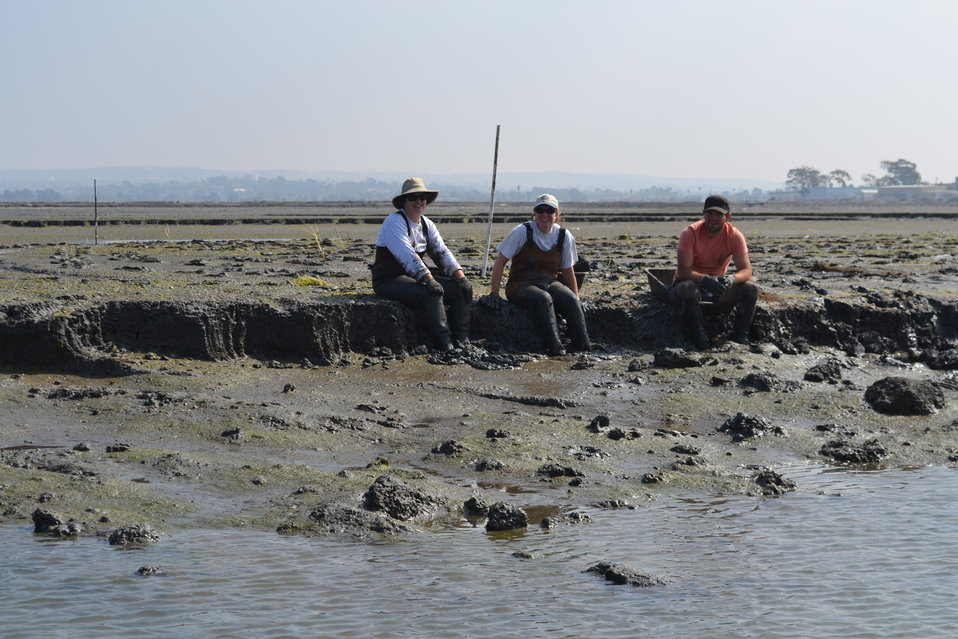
Muddy restoration ecologists

Biologists from contractor Merkel & Assoc, Inc. take a lunch break while planting cordgrass in the sinking marsh mud. Merkel was contracted to do some activities for the South San Diego Bay Coastal Restoration & Enhancement Project, completed in fall of 2011, where these salt ponds were breached in two places; allowing new tidal flow in the former salt ponds after 60 years. (Lisa Cox/USFWS)
www.fws.gov/sandiegorefuges/Western Salt Ponds Rest...